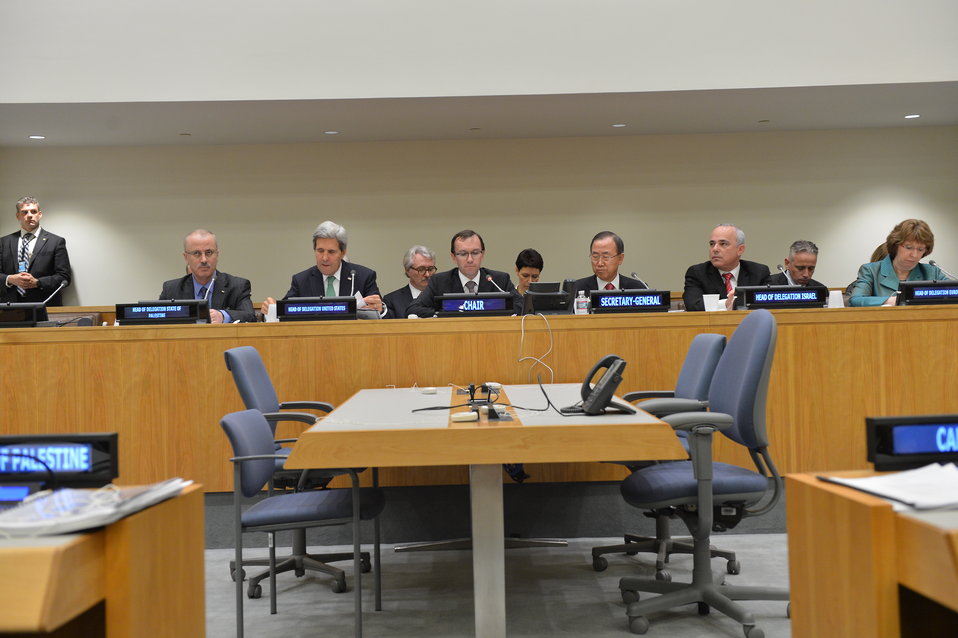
Secretary Kerry at the Ad Hoc Liaison Committee Meeting

U.S. Secretary of State John Kerry participates in a meeting of the Ad Hoc Liaison Committee at the United Nations in New York City on September 25, 2013.